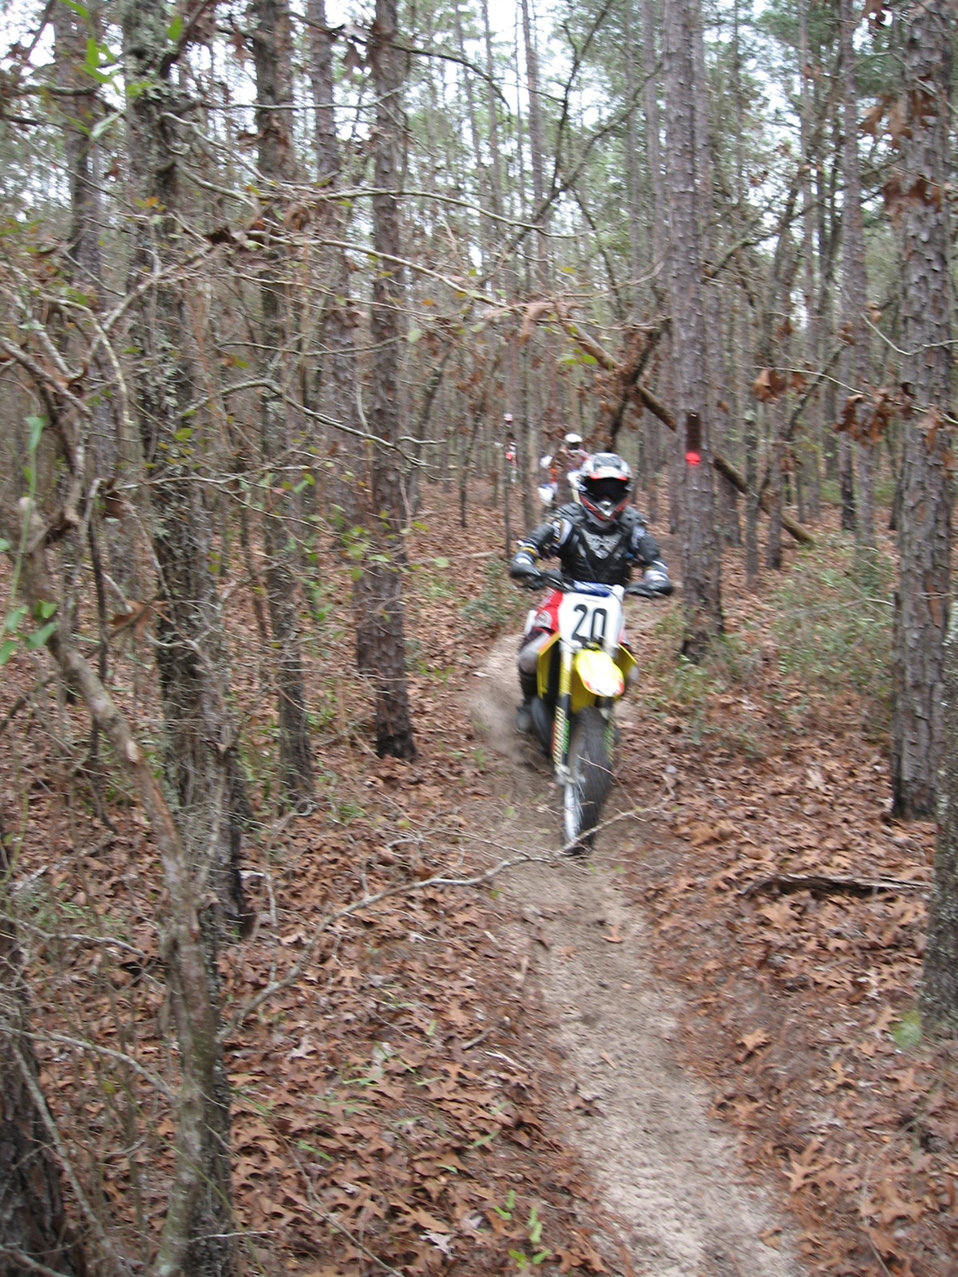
motorcycle 6

A local motorcycle enthusiast runs one of the motorized trails on the Apalachicola National Forest near Tallahassee, FL. The forest features approximately 111 miles of trails for motorcycles, all-terrain vehicles and other off-highway vehicles.